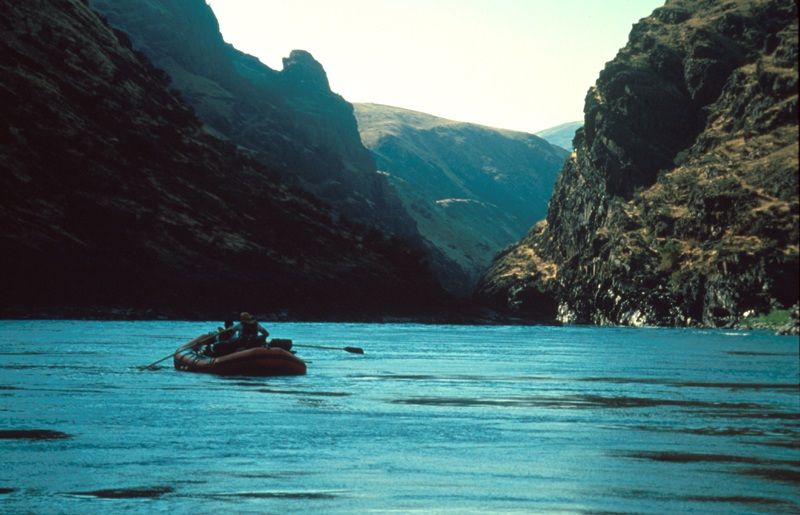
Rafting Lower Salmon River UCSC Upper Columbia Salmon Clearwater District